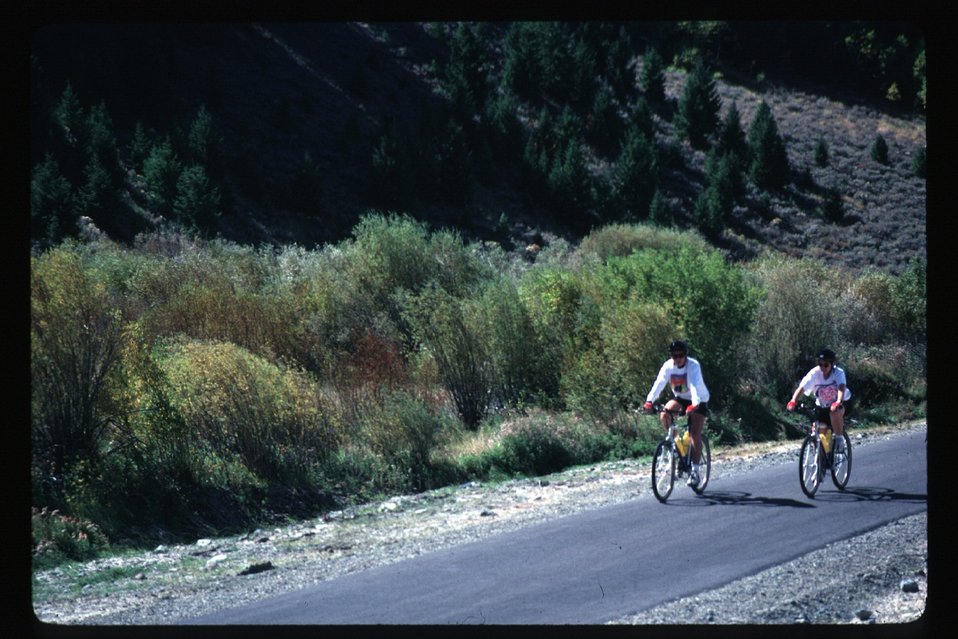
Sun Valley Bike Trail Recreation Scenic Biker Shoshone Field Office USRD Upper Snake River District